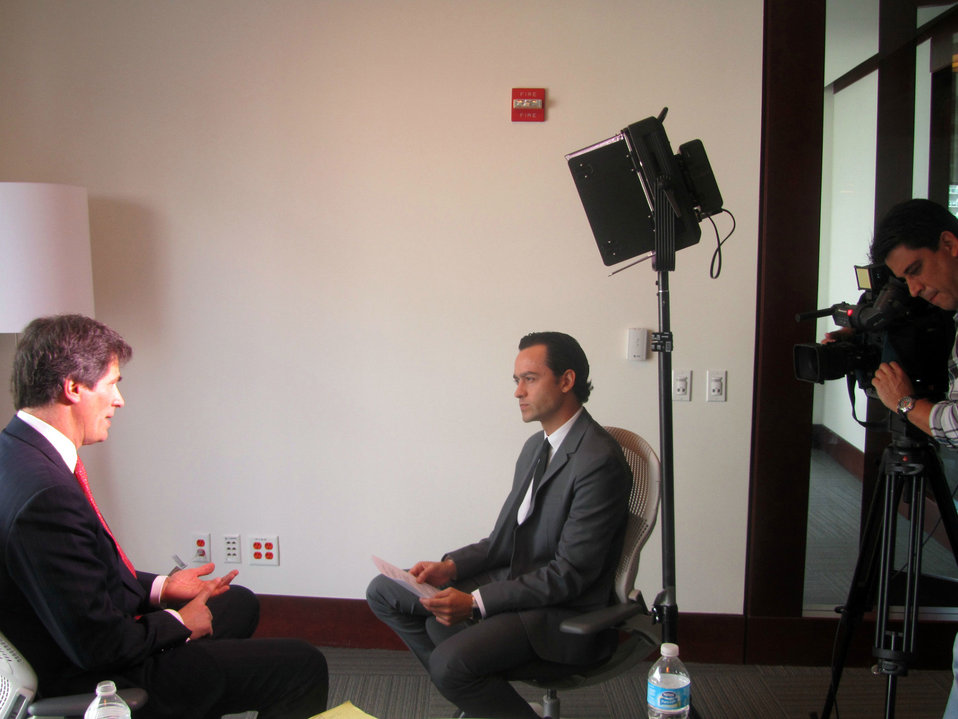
Assistant Secretary Fernandez Explains Foreign Policy Priorities for the Americas

Assistant Secretary of State for Economic and Business Affairs Jose W. Fernandez explains foreign policy priorities for the Americas during an interview with Ismael Trivino, correspondent for Mundo Fox, NTN24, and RCN in Miami, Florida, February 6, 2013.